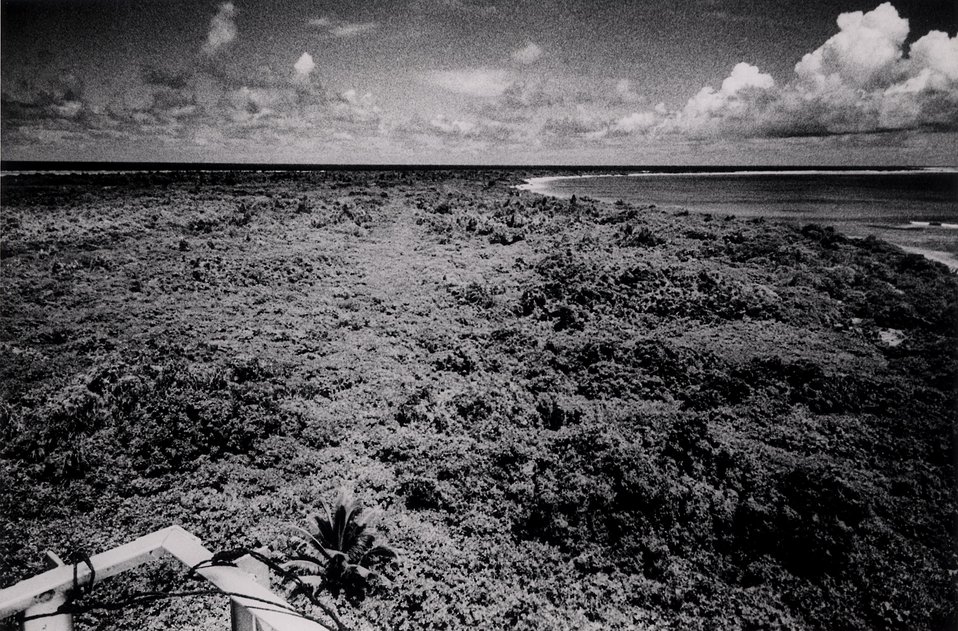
Scientists evaluate condition of the Bikini Islands six years after nuclear testing.